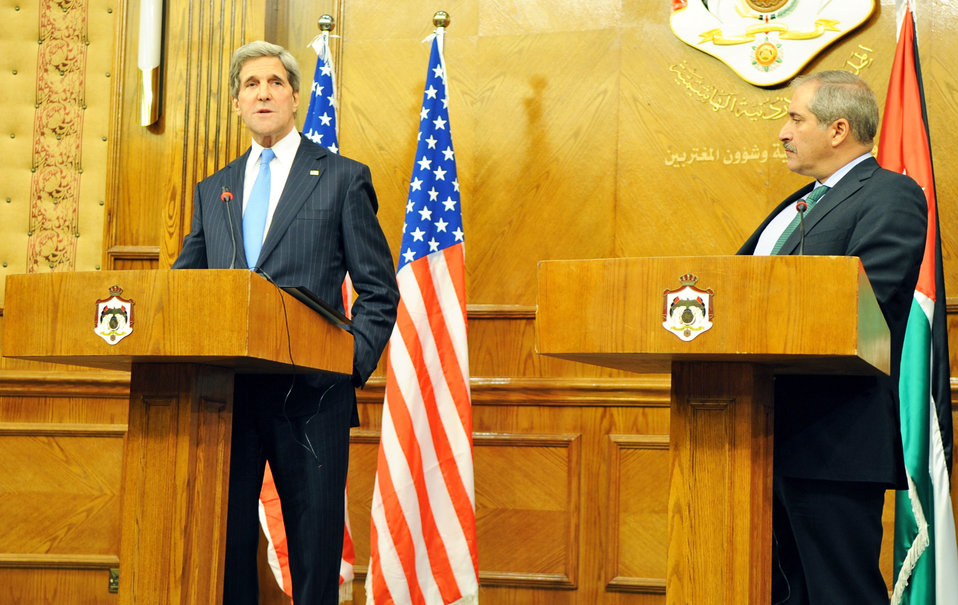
Secretary Kerry and Jordanian Foreign Minister Judeh Address Reporters

U.S. Secretary of State John Kerry and Jordanian Foreign Minister Nasser Judeh address reporters after their bilateral meeting in Amman, Jordan, on May 22, 2013.